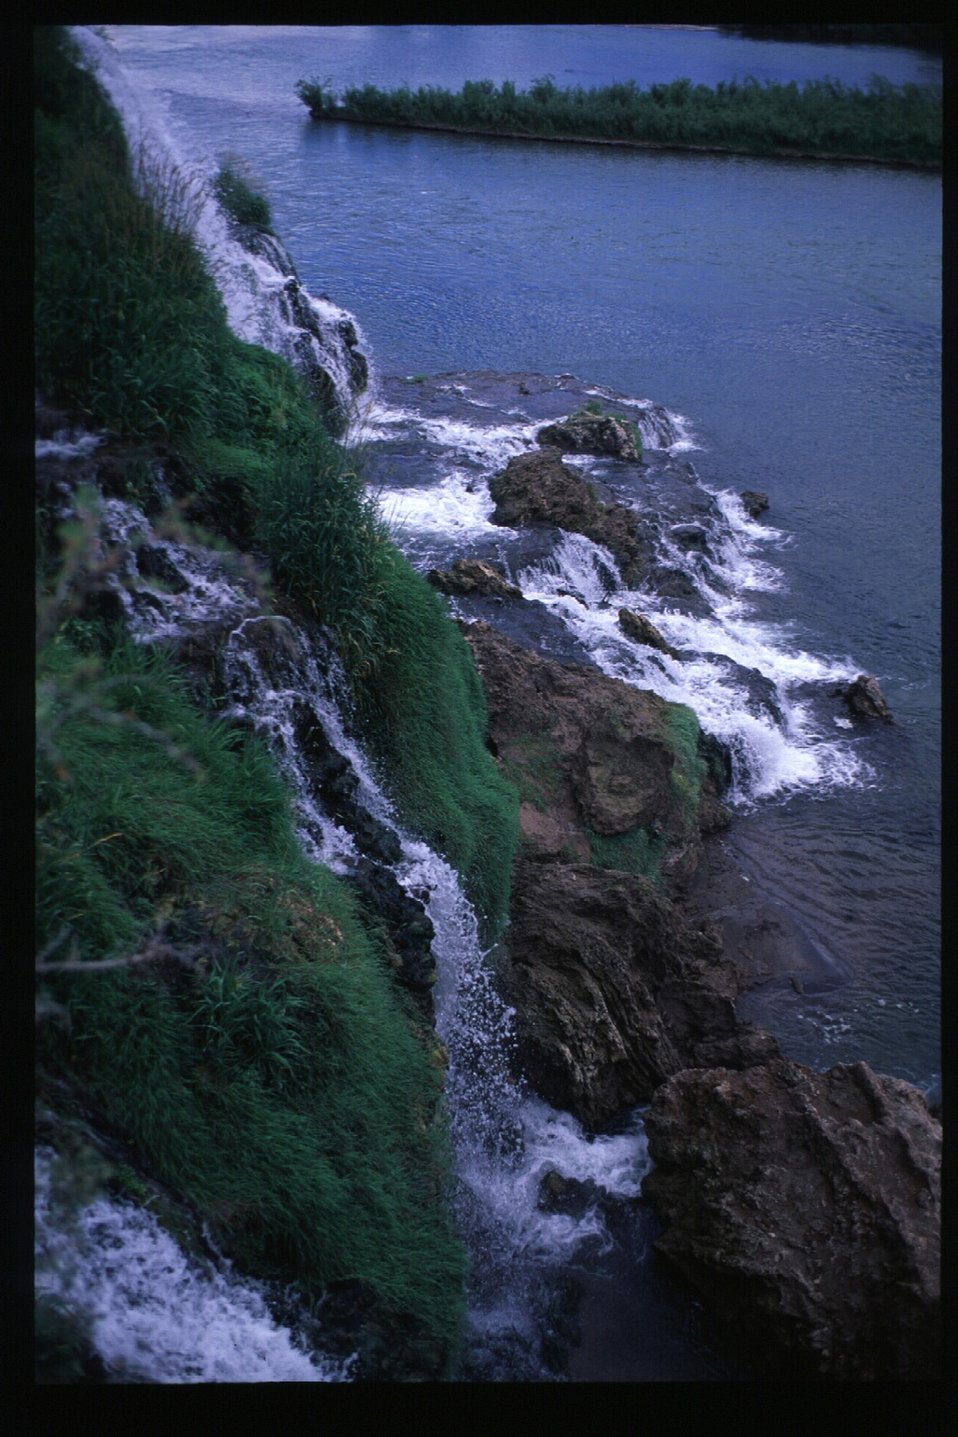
Scenics Fall Creek Falls Water Fall Snake River Canyon USRD Upper Snake River District